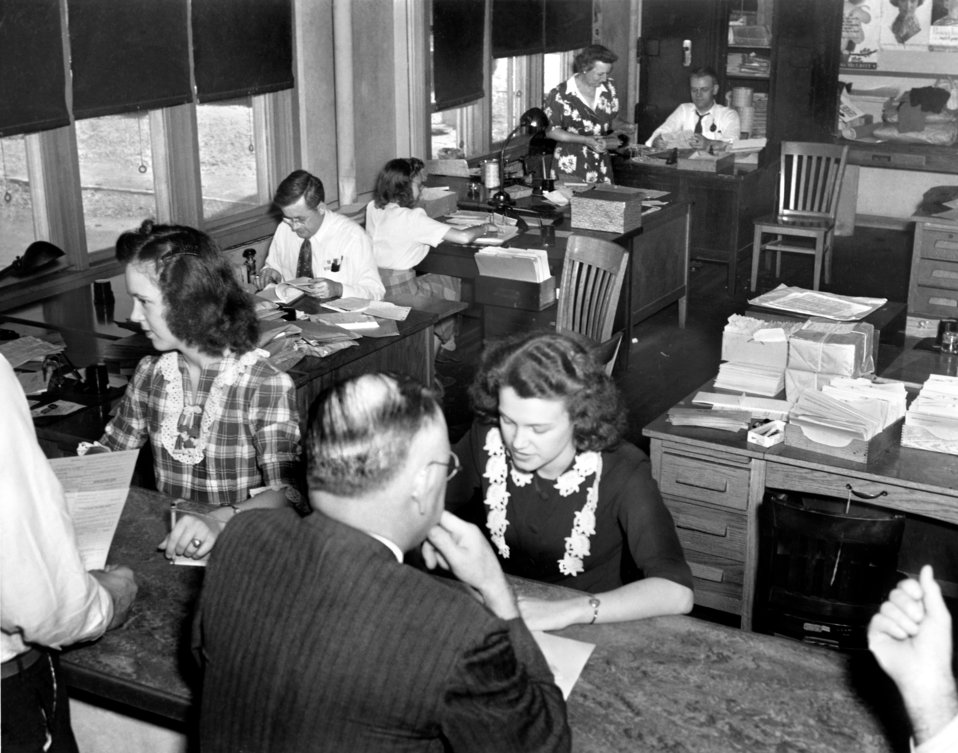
Office of Price Administration Board Office 1944 Oak Ridge

pro55-4 DOE photo Ed Westcott 2-21-1944 Oak Ridge Tennessee